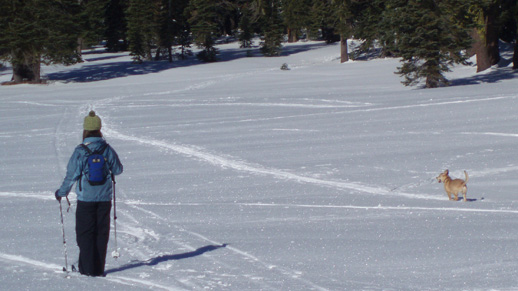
Cross country skiing

The family dog enjoys cross-country skiing on the Shasta-Trinity National Forest in California.